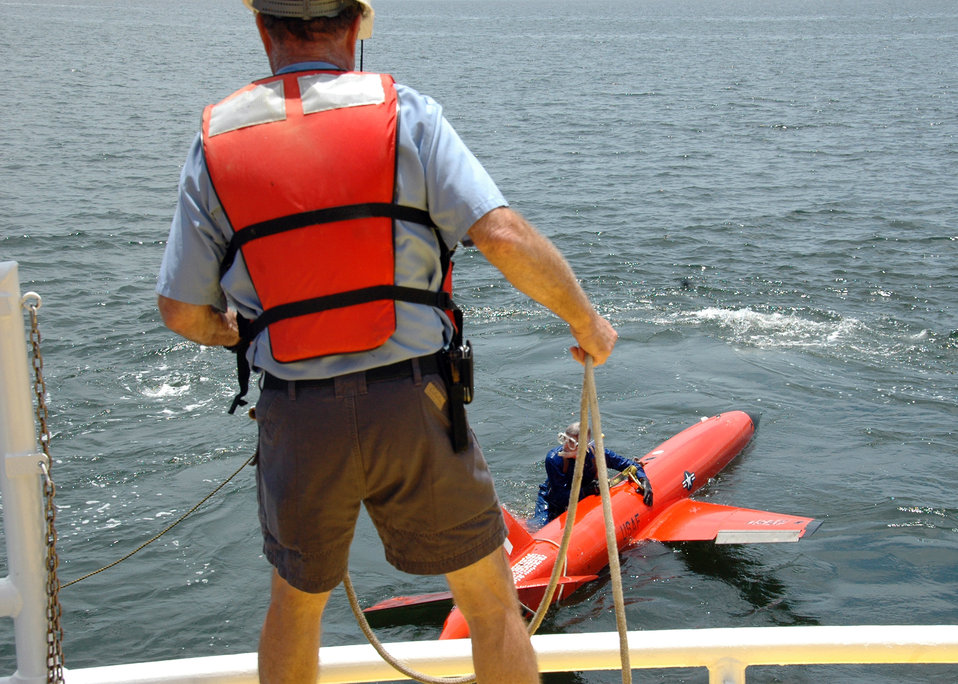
Drone recovery

Byron Howle helps diver Ray Gallien to secure the BQM-167 sub-scale drone during a recovery demonstration recently in the waters off Tyndall Air Force Base, Fla. The ship used for recovery is one of only three 120-foot boats owned by the Air Force. Mr. Howle and Mr. Gallien are contracted from Florida Offshore through the 82nd Aerial Targets Squadron to help recover the drones after they are shot down during live-fire exercises conducted by the 53rd Weapons Evaluation Group.